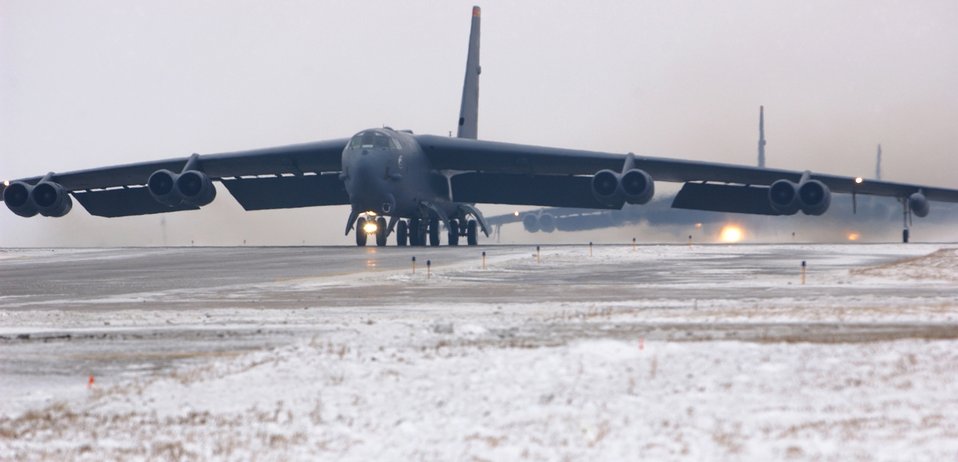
On alert

A B-52 Stratofortress taxis during an alert exercise at Minot Air Force Base, N.D., Monday, March 6, 2006. Alert generation exercises are held to ensure the base can respond rapidly to national objectives.